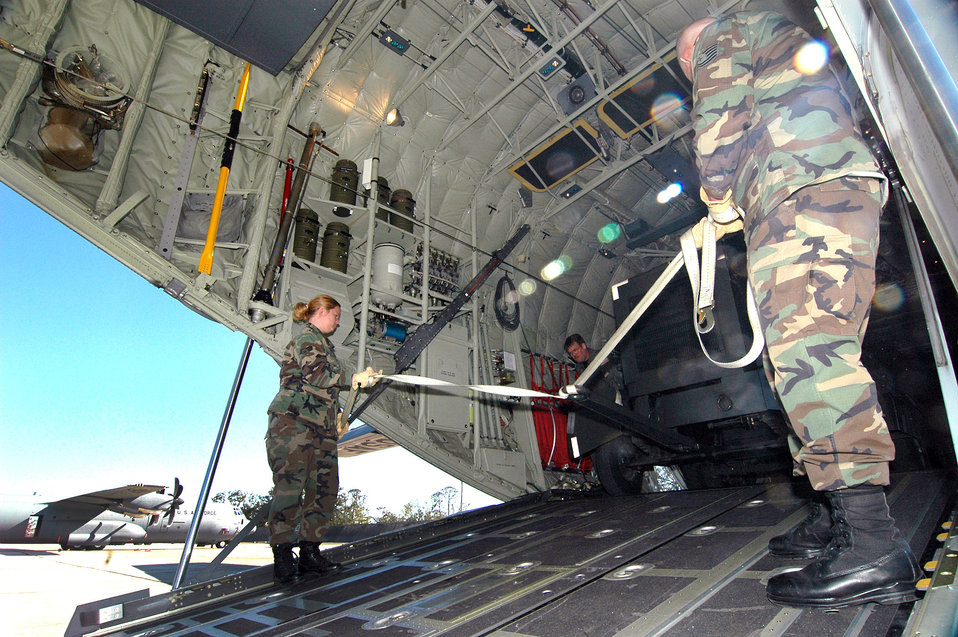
Back home

Reservists from the 41st Aerial Port unload a 5,000 pound generator from a C-130J Hercules. The aircraft returned home after flying missions out of Dobbins Air Reserve Base, Ga., since Hurricane Katrina bashed apart its home base. Defense officials are working to determine the role going forward for the nation's reserve-component forces